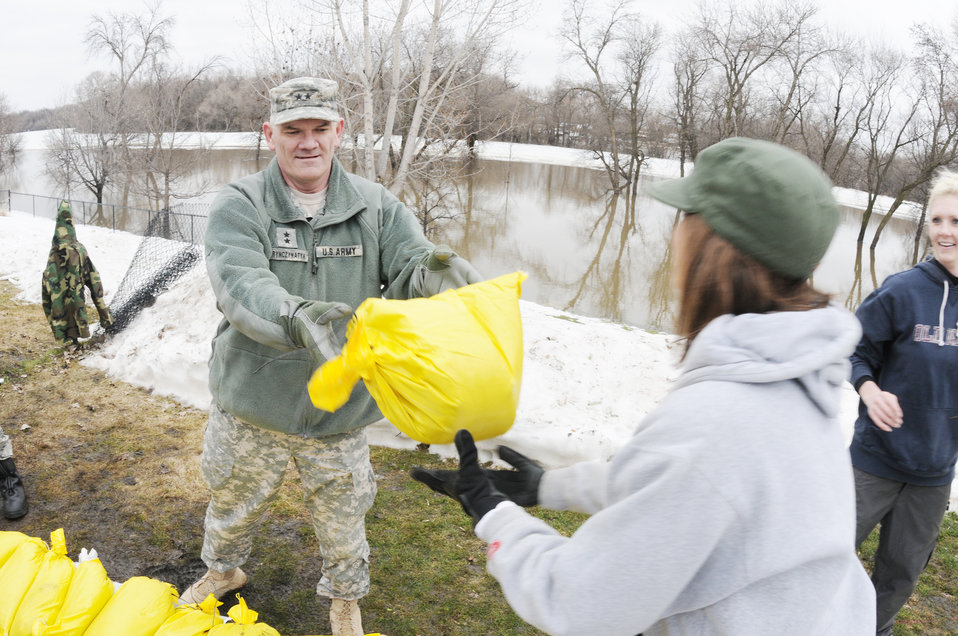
Fighting rising water in Fargo

Adjutant General for North Dakota Army Maj. Gen. David Sprynczynatyk passes a sandbag to a flood-fighting volunteer March 16, 2010, along the Red River in the south end of Fargo, N.D. The quickly rising water of the Red River behind him is a reminder of the urgency of the flood fighting mission.